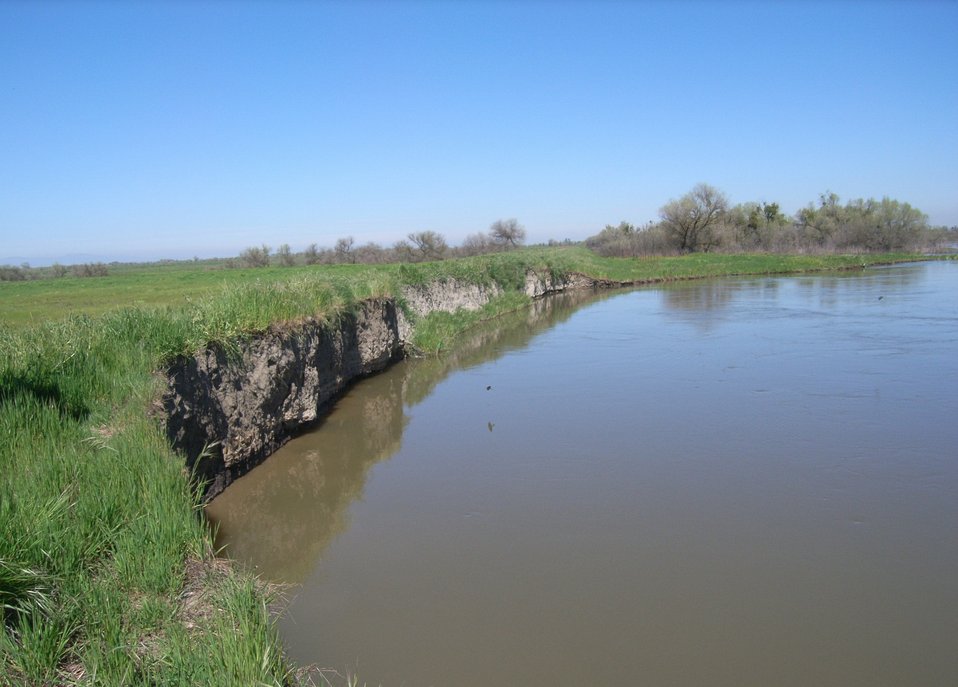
Levee erosion in the Stockton area

Levee erosion in the Stockton, Calif., area, shown during a levee inspection in 2010. The U.S. Army Corps of Engineers inspects levees in its Rehabilitation and Inspection Program to ensure levees don’t pose an unacceptable risk to lives and to provide levee managers and residents with detailed information on the condition of levees to help them make informed decisions about safety.